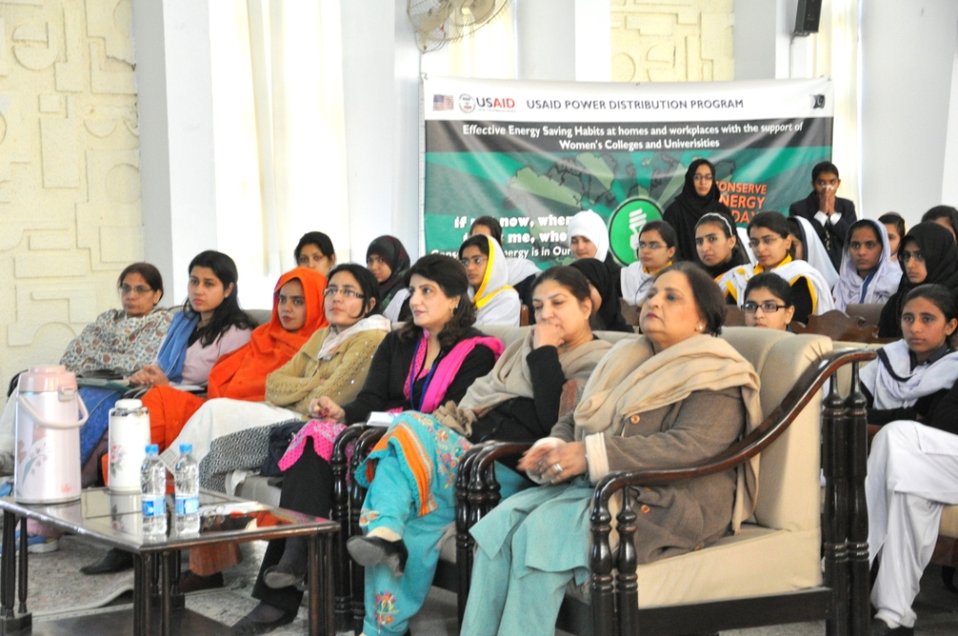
Effective Energy Saving Habits Campaign

Vice Principals Rubina Maqbool and Rabiya Khalid of the Islamabad postgraduate college for girls in F-6/2, along with teachers and students attended the kick-off event highlighting “Effective Energy Saving Habits at homes and workplaces with the support of Women's Colleges and Universities”. The event was held as part of the USAID Power Distribution Program’s ‘Gender Strategy' to improve and promote the role of women in the energy sector. Motivating young women to save electricity through energy conservation campaigns, will help combat the power crisis in Pakistan.